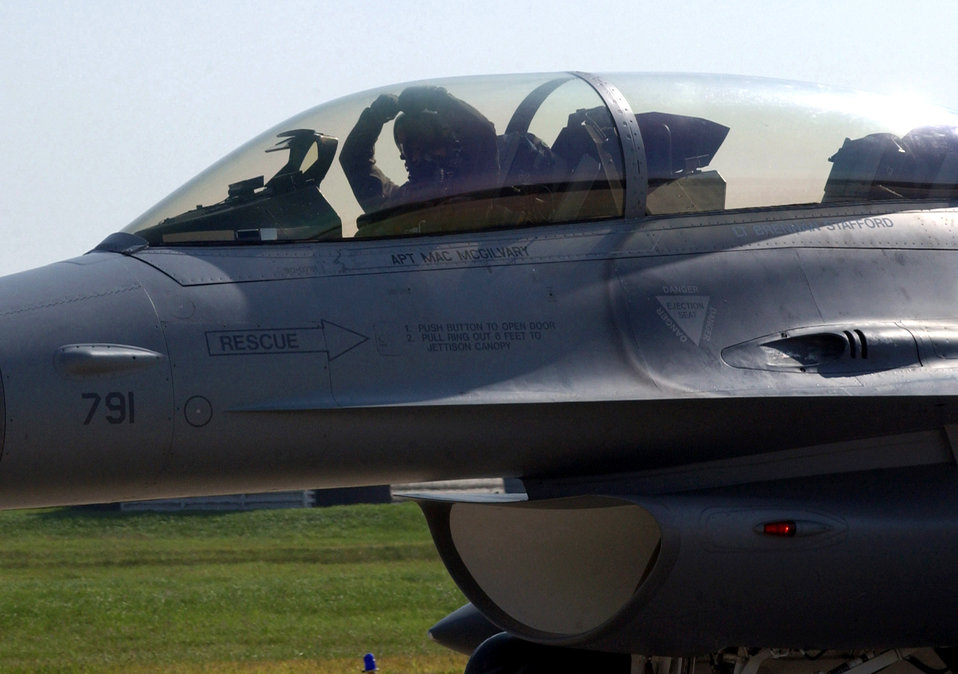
Kunsan receives upgraded fighters

Lt. Col. Shane Riza arrives at Kunsan Air Base, South Korea, Oct. 2 in a new Block 40 F-16 Fighting Falcon. He and three other pilots from Kunsan's 8th Fighter Wing traveled to Eielson Air Force Base, Alaska, to fly the upgraded fighters to Kunsan. Colonel Riza is the 80th Fighter Squadron director of operations.